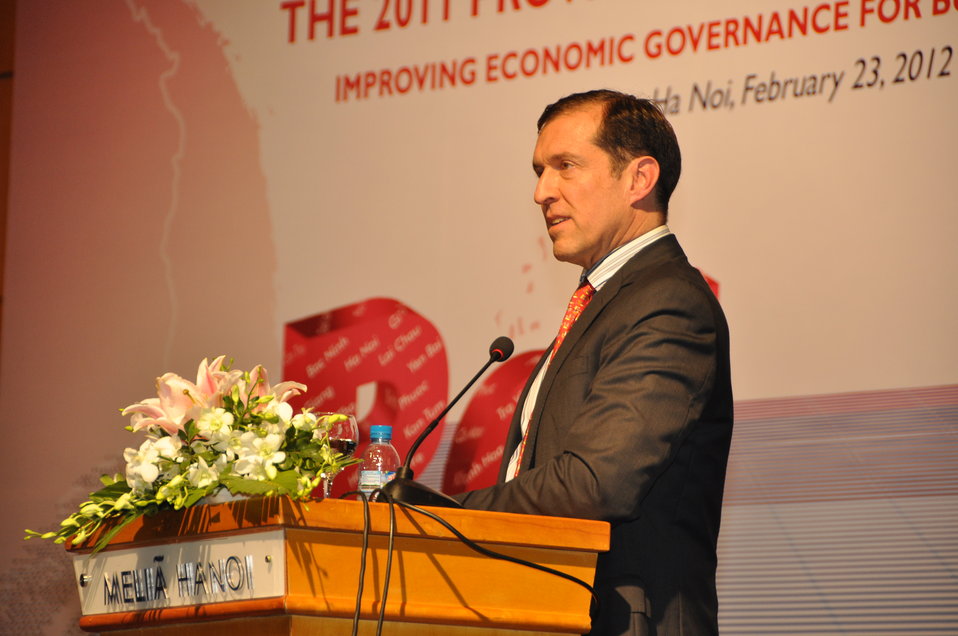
Provincial Competitiveness Index 2011 Launch